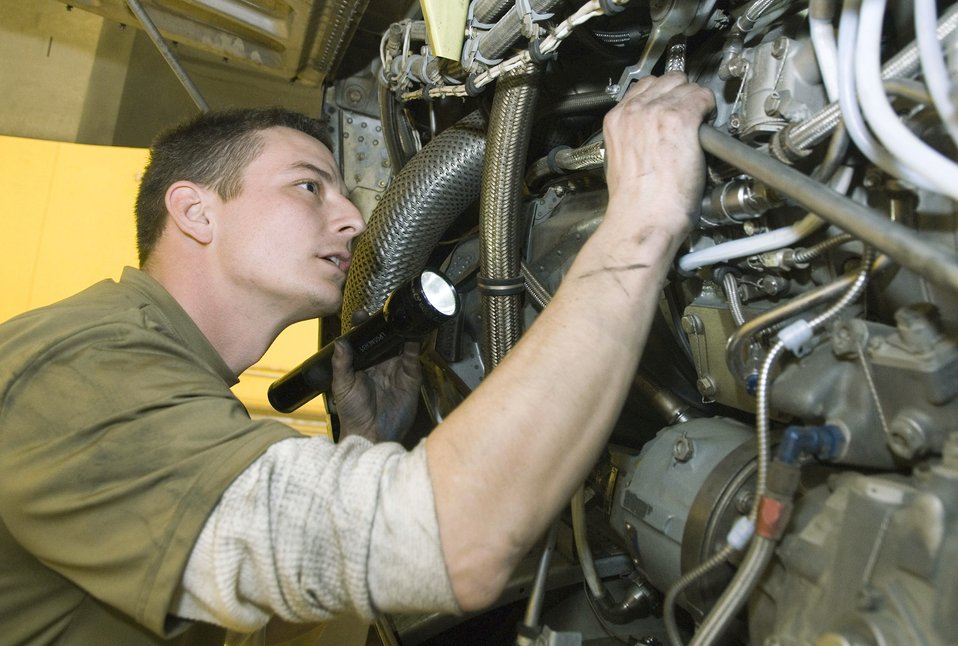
What's under the hood

Senior Airman Wes Leturgez performs a rig test on a C-130 Hercules engine Jan. 4 at Balad Air Base, Iraq. The rigging of the aircraft controls all propeller systems in the engine compartment. Airman Leturgez is an aircraft maintenance unit crew chief for the 777th Expeditionary Airlift Squadron and is deployed from Little Rock Air Force Base, Ark.